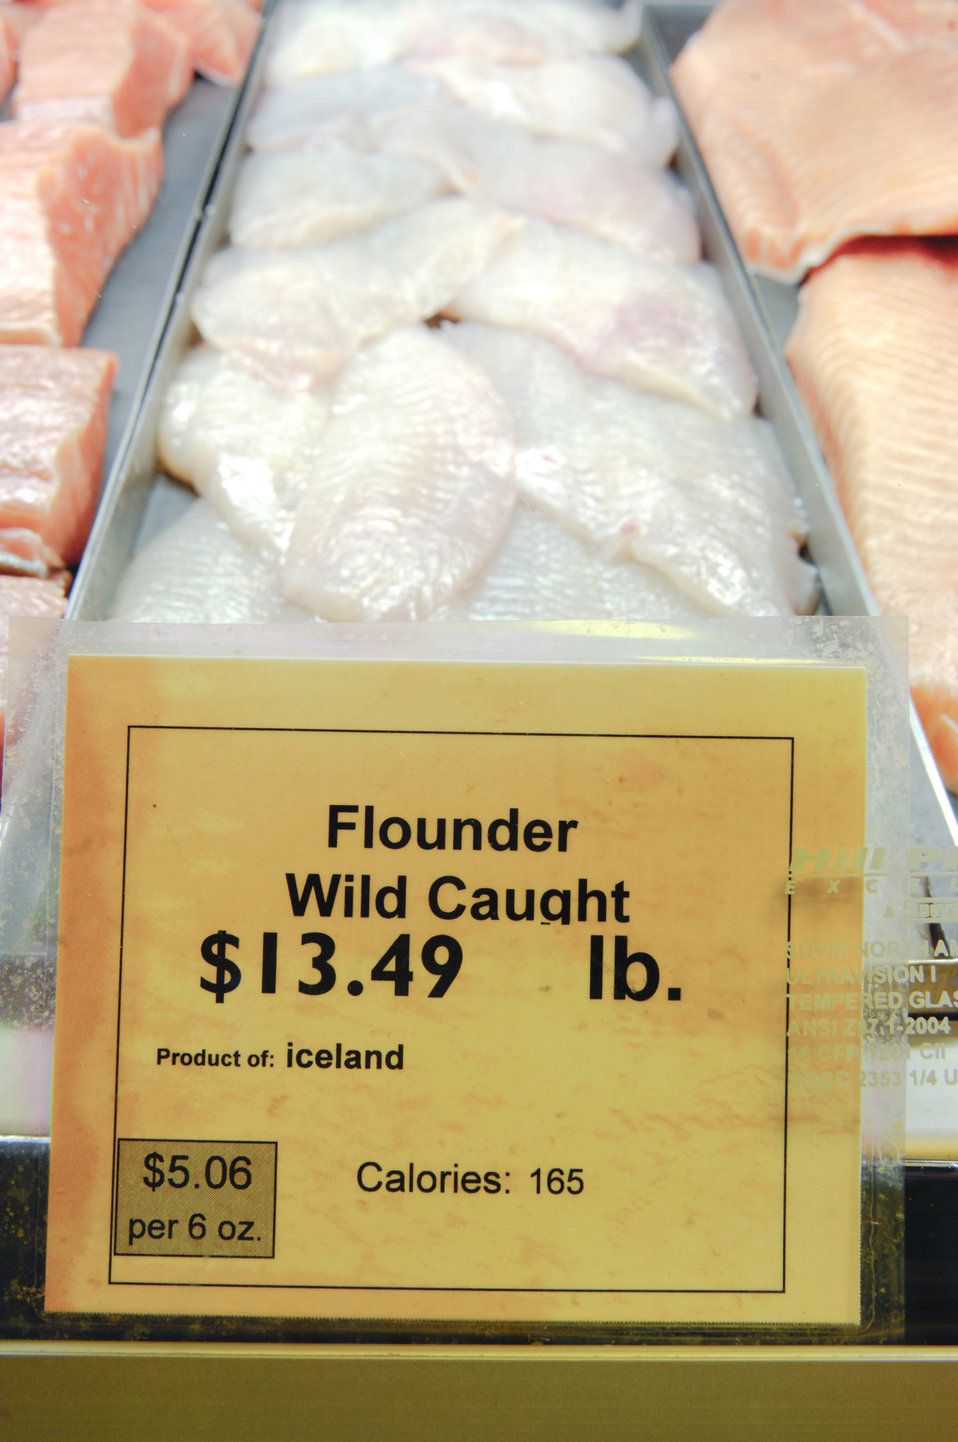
Fish sold at Wegman’s Supermarket in Fredericksburg, Virginia on September 1, 2009 displays the required Country of Origin Label (COOL). COOL is a labeling law that requires retailer, such as full-line grocery stores, supermarkets, and club warehouse stores to notify their customers with information regarding the source of certain foods. Food products and covered commodities contained in the law include muscle cut and ground meats of beef, veal, pork, lamb, goat, and chicken; wild and farm-raised fish and shellfish; fresh and frozen fruits and vegetables; peanuts, pecans, and macadamia nuts; and ginseng. The U.S. Department of Agriculture (USDA) Agricultural Marketing Service (AMS) is responsible for the administration and enforcement of COOL.